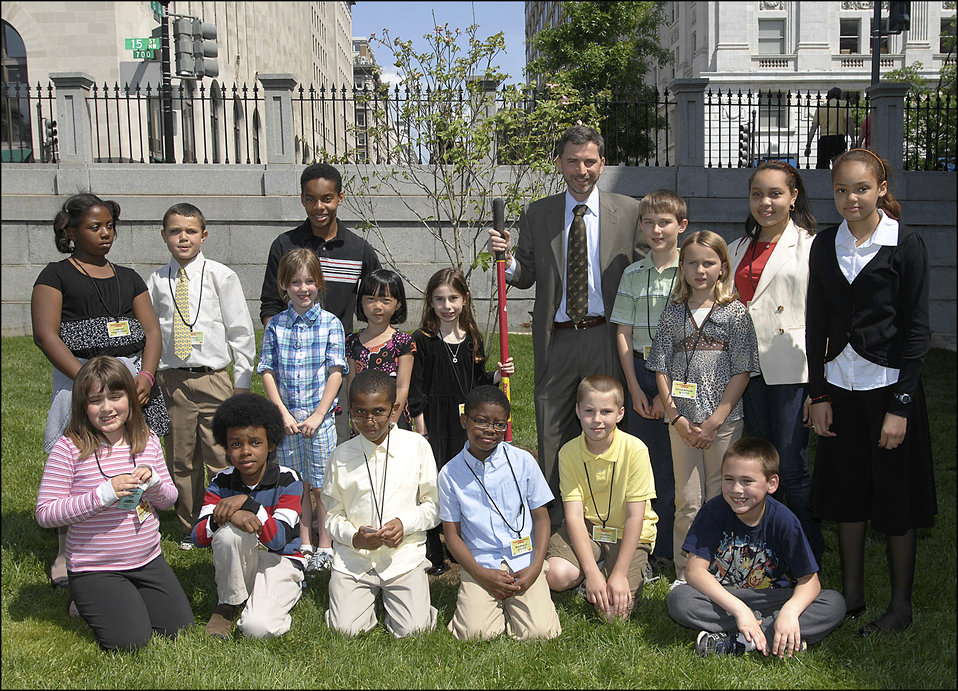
Earth Day/Take Your Children to Work Day, 4/22/10

Some of the children participating in 'Take Your Children to Work Day' with Assistant Secretary for Management Dan Tangherlini after planting a tree for Earth Day at the Treasury Department on April 22, 2010.